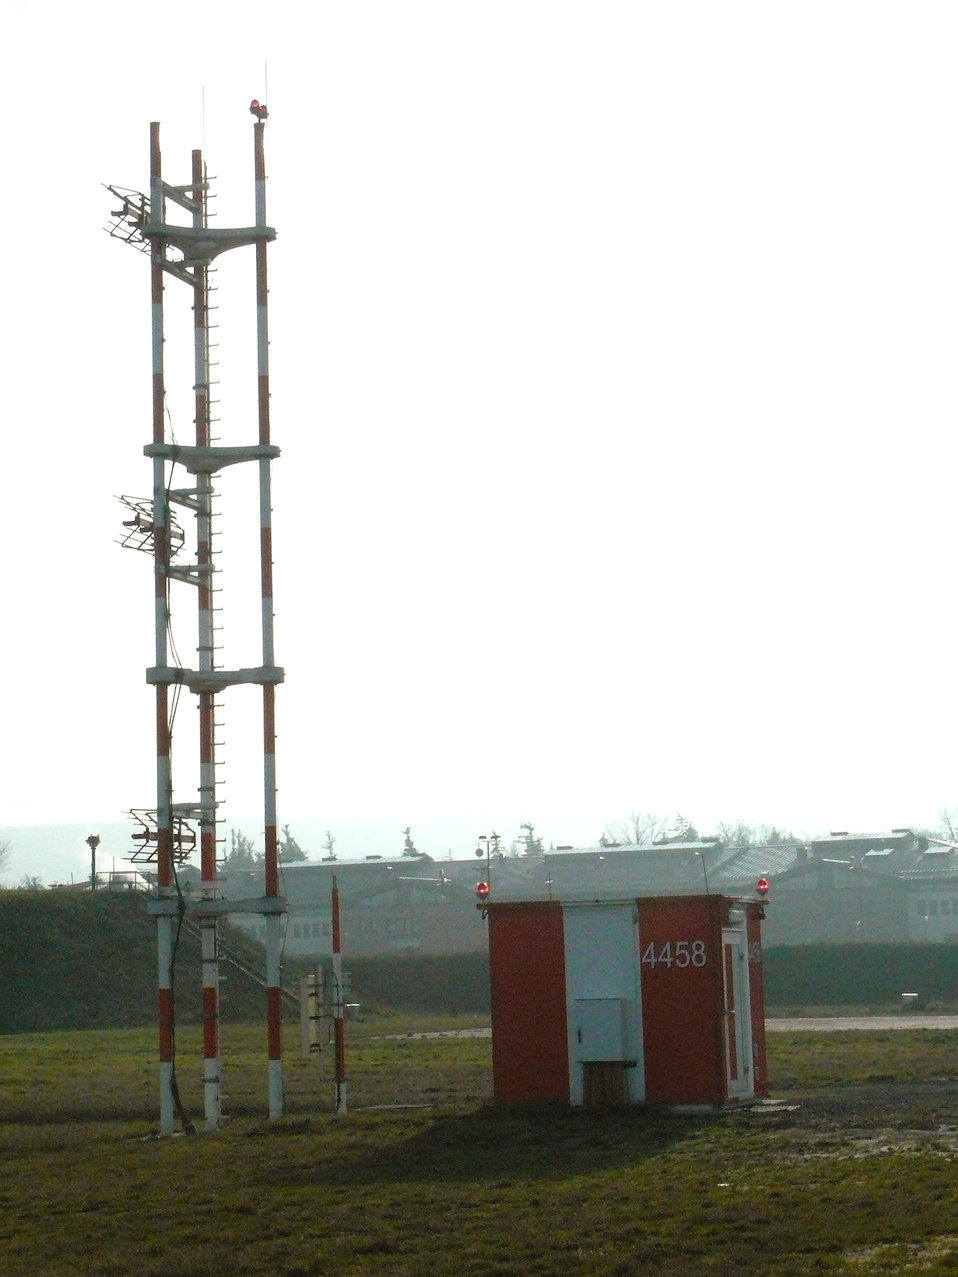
Capt. Erin Dorrance

The glide scope equipment part of the CAT II instrument landing system allows aircraft and crews to land in very low-visibility conditions at Ramstein Air Base, Germany. The airfield sends a signal notifying incoming aircraft to altitude information during CAT II and CAT III conditions.